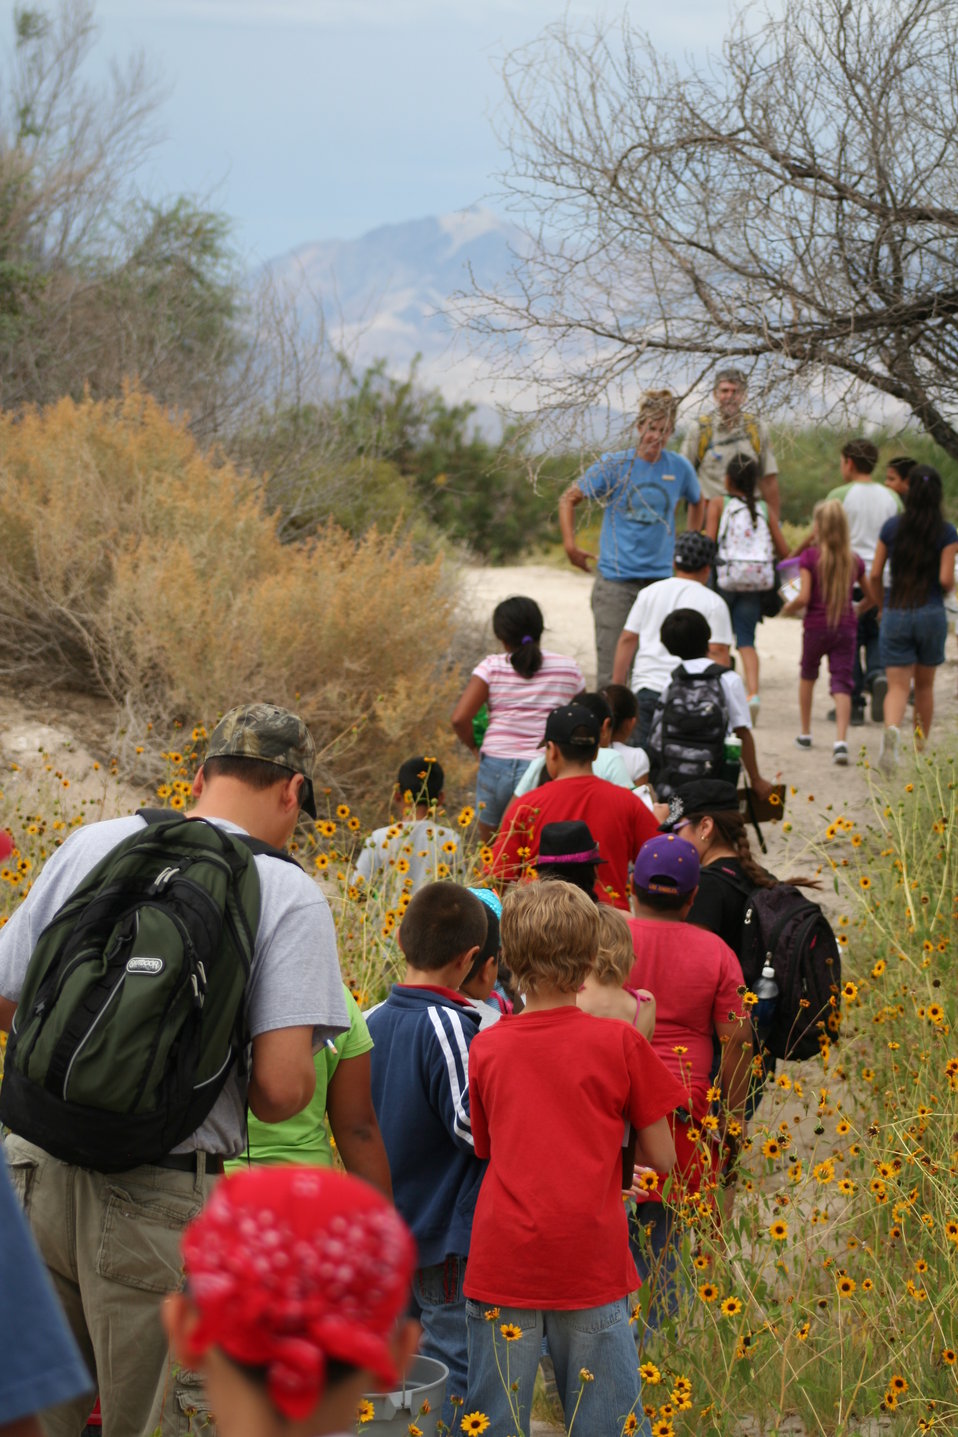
Hiking to the dunes.

Over 50 kids and adults visited Peterson Reservoir for a day of reptile exploration! Cyndi Souza/USFWS photo, 9-10-2011.